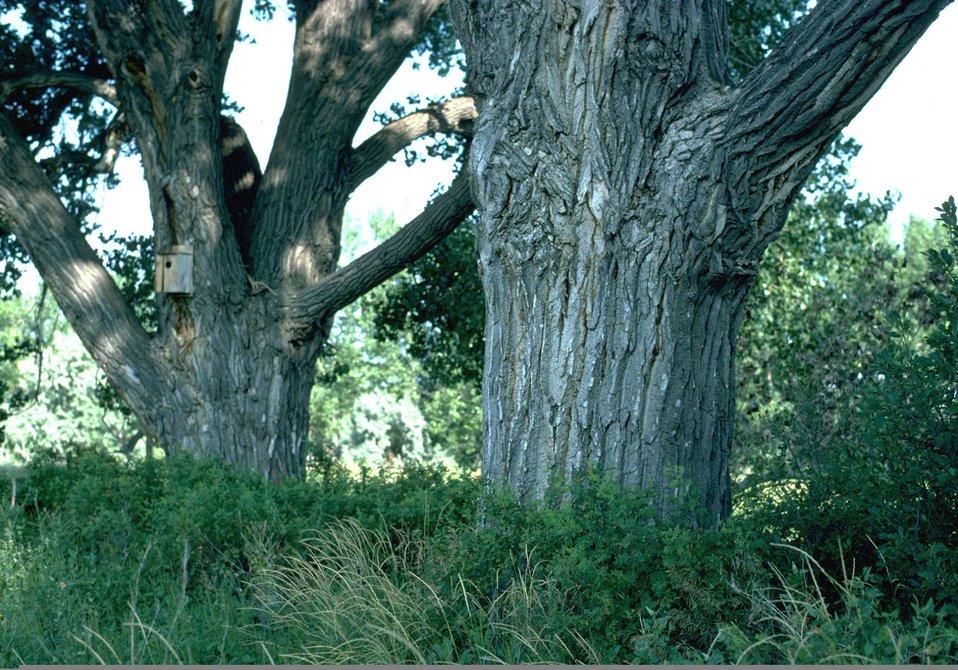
Cottonwood trees